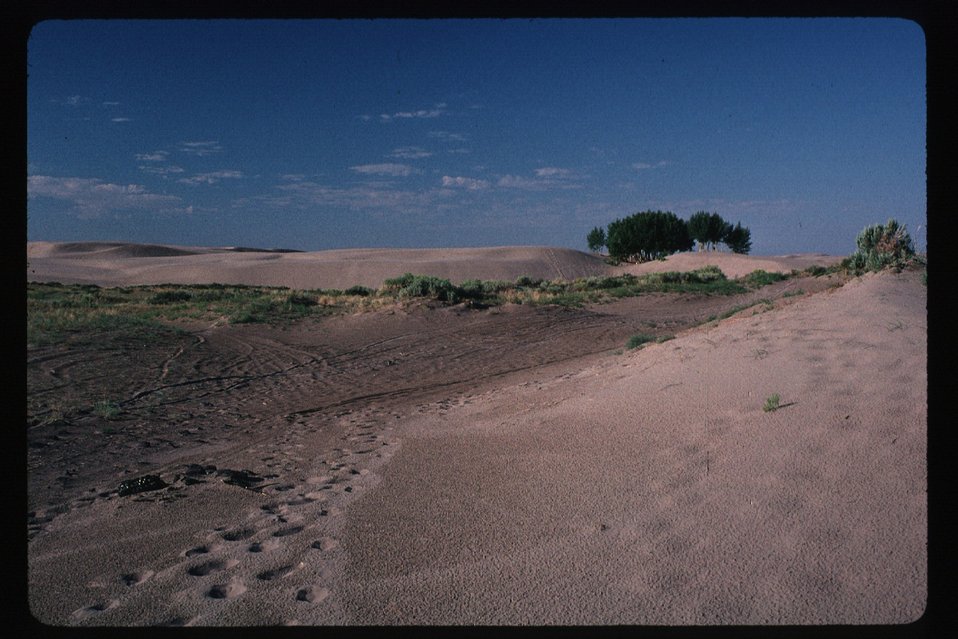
Recreation St Anthony Sand Dunes Off Highway Vehicles Idaho Falls Field Office USRD Upper Snake River District